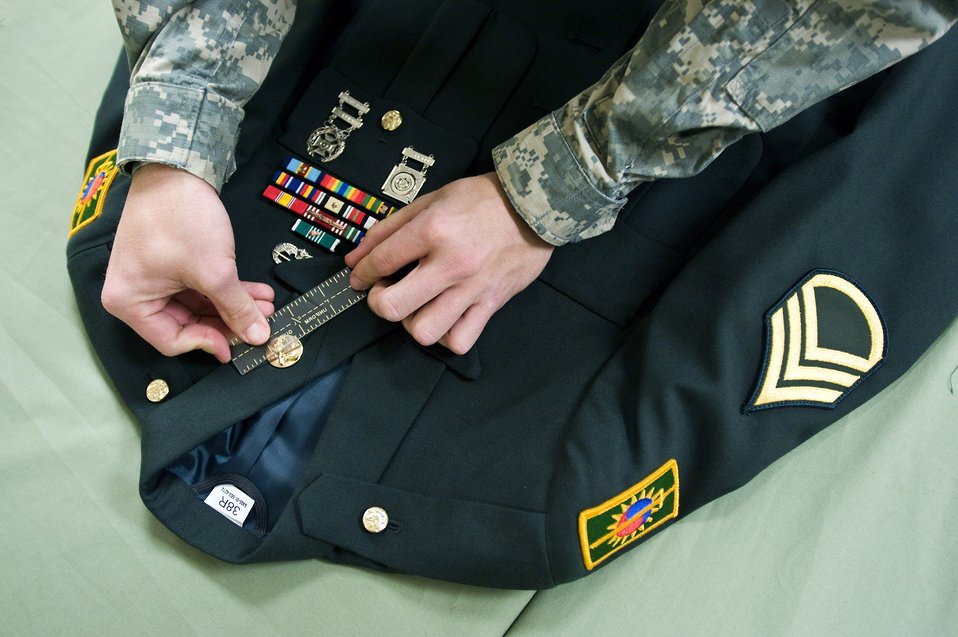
Air Force Mortuary Affairs Operations Center

Specialist Noel Rivera, a mortuary affairs specialist, prepares a U.S. Army service dress uniform for a fallen solider. Servicemembers in the uniform section of the Air Force Mortuary Affairs Operations Center at Dover Air Force Base, Del., prepare uniforms for the fallen heroes and work with military escorts for the dignified-transfer-of-remains process. Specialist Rivera is deployed from the Army Reserve, 311th Quartermaster Company in Puerto Rico.